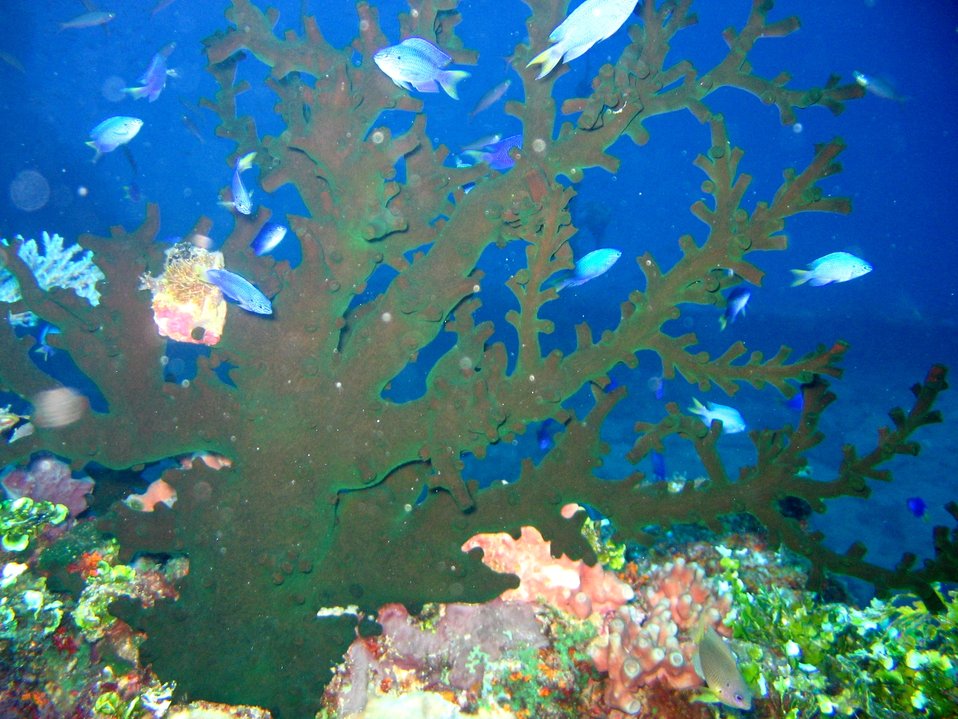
Soft corals.